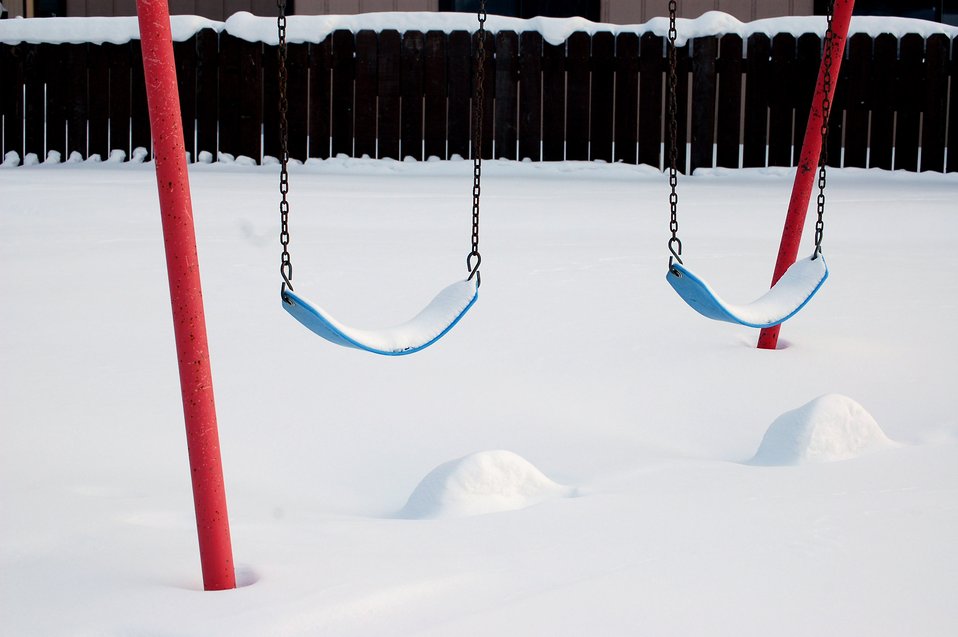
Eielson helps Airmen move into new homes in a hurry

Abandoned swings sit covered in snow in the Sprucewood Homes section of base housing Feb. 27 at Eielson Air Force Base, Alaska. Three hundred Air Force families had to be moved out of the privatized housing into new housing from September to December. The reason for the move was due to a conclusion of a privatized housing contract that wasn't able to be renegotiated.